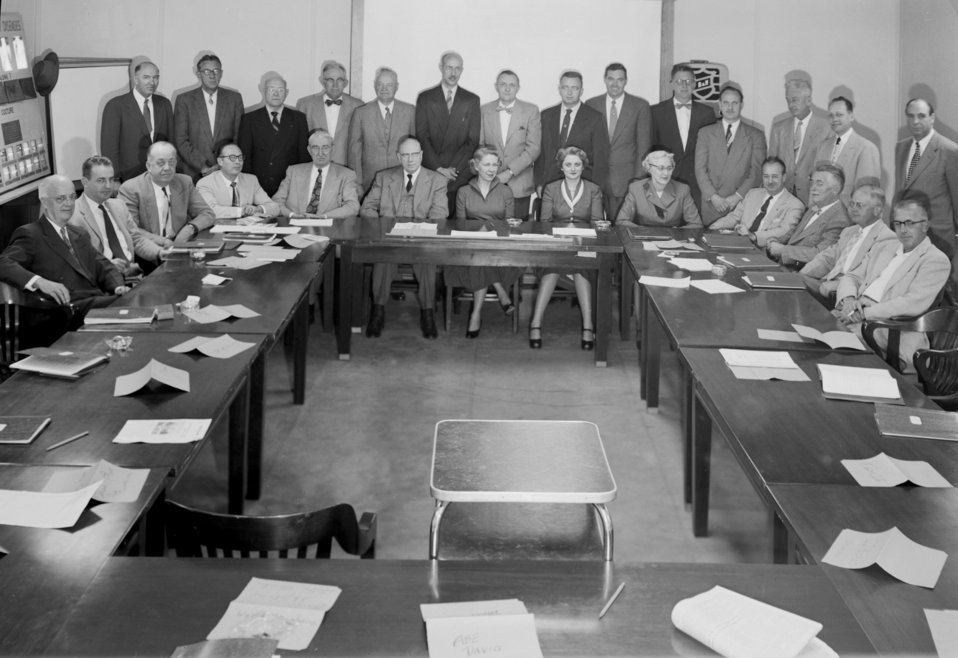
This 1954 photograph depicts the staff Health Officers of T.B. Control.